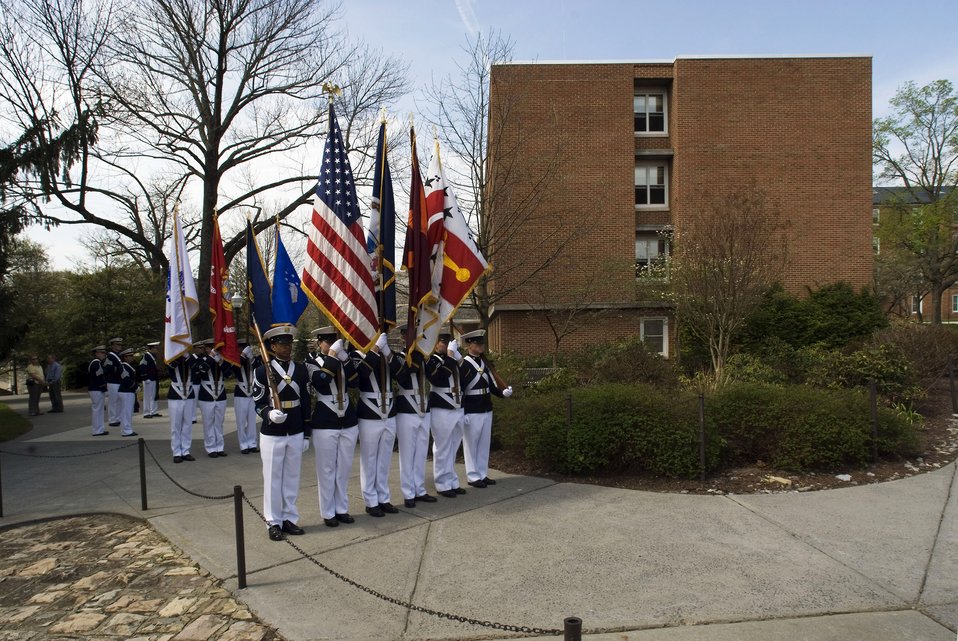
Virginia Tech corps of cadets pay honors to one of their own

The Color Guard prepares to leave the Upper Quadrangle at Virginia Tech for the regimental march to the cemetery in Blacksburg, Va., April 25. The school's Corps of Cadets paid honors to one of their classmates. Cadet Matthew La Porte, a sophomore in Air Force ROTC Detachment 875 and the Virginia Tech Corps of Cadets, was one of the 32 students and faculty killed during the shooting incident at the school April 16.